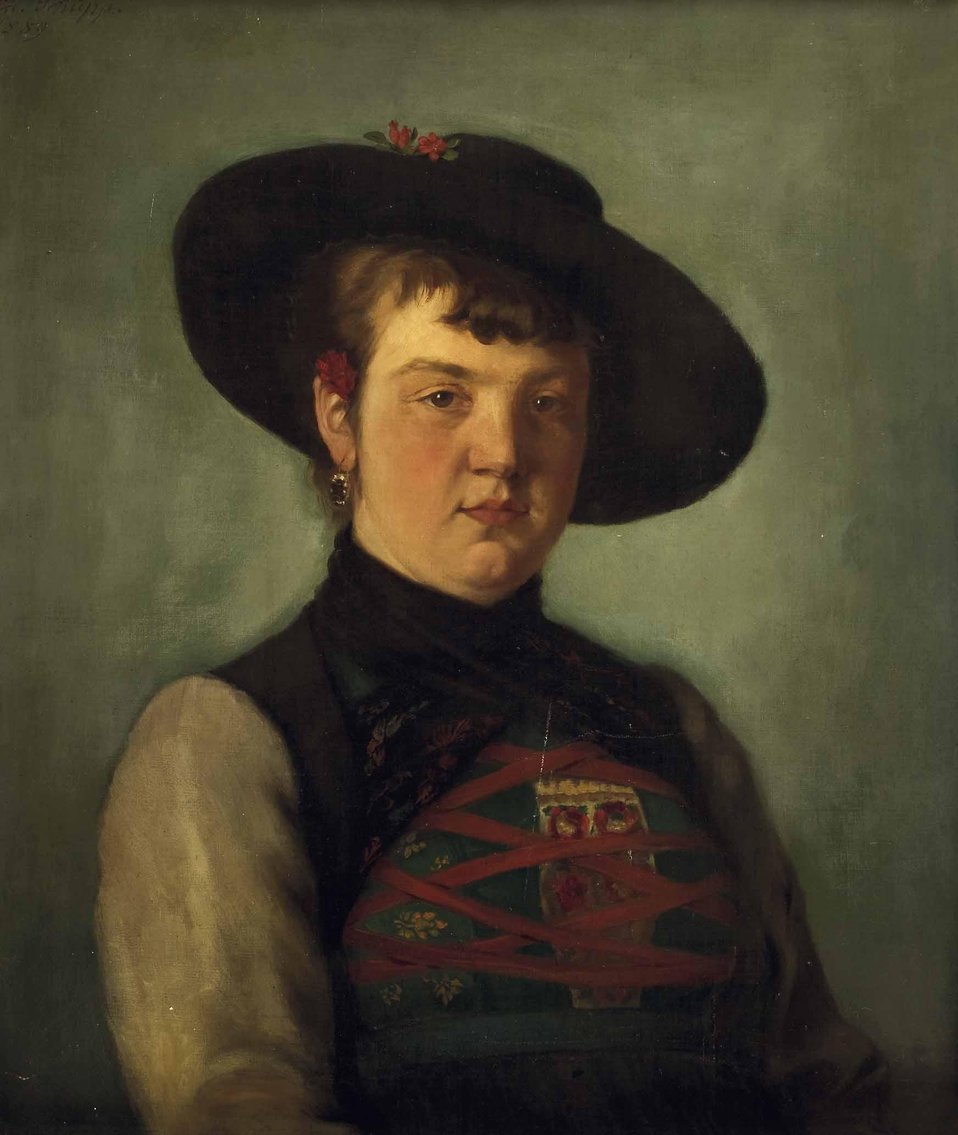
Deutsch: Frau in bayrischer Tracht. Signiert und datiert: Ed. Schupp 1889, Öl auf Leinwand, ca. 61,5 x 52 cm